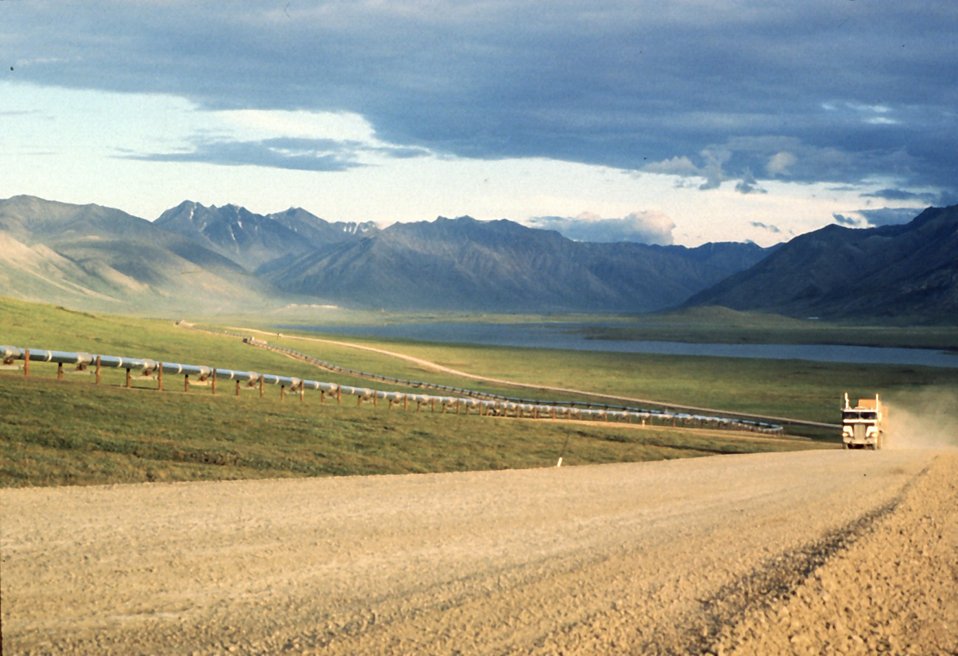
Dalton Highway